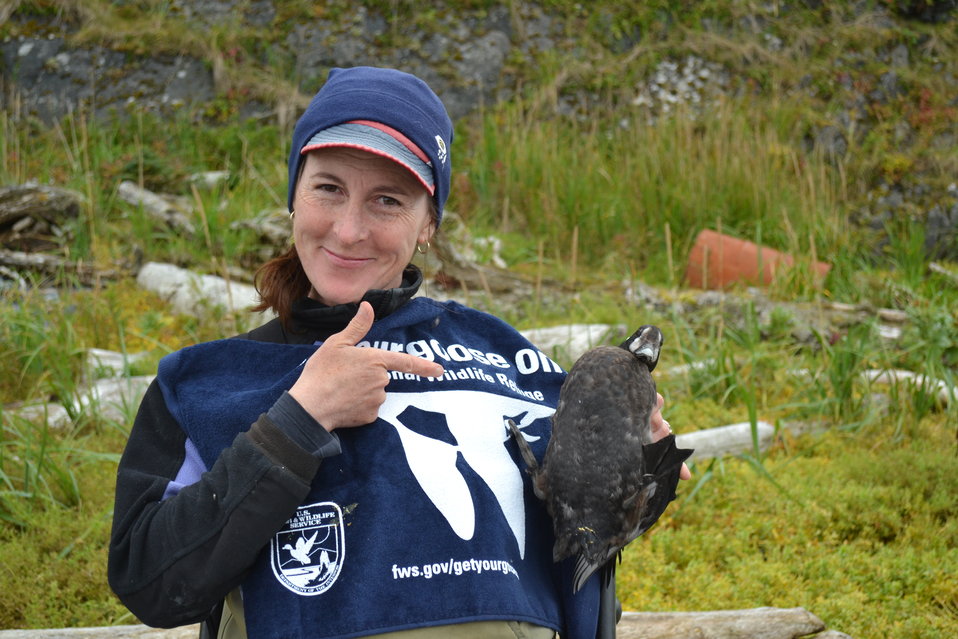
Get Your Goose On! - Alaska Style

Kodiak Refuge Bird Biologist Robin Corcoran with a Harlequin Duck

Credit: Katharine Studholme / USFWS

The Kodiak National Wildlife Refuge is a United States National Wildlife Refuge in the Kodiak Archipelago in southwestern Alaska, United States.

The Kodiak National Wildlife Refuge includes the southwestern two-thirds of Kodiak Island, Uganik Island, the Red Peaks area of Afognak Island and all of Ban Island in the archipelago. It encompasses 1,990,418 acres (8,054.94 km2).[2] The refuge is administered from offices in Kodiak.

The refuge contains seven major rivers and about 100 streams. It is a spawning ground for all six species of Pacific Ocean salmon, trout and several other fish species, as well as a nesting ground for 250 species of bird, many of which feed on salmon. The refuge has only six native species of mammals: Kodiak brown bear, red fox, river otter, ermine, little brown bat and tundra vole. The non-native mammals Sitka deer, mountain goat, Roosevelt elk, snowshoe hare and beaver were introduced to the archipelago between the 1920s and 1950s and are now hunted and trapped.

The climate of the refuge is that of southern Alaska, mild and rainy. Many areas in the refuge are densely forested with Sitka Spruce at lower elevations. There are grasslands in drier areas and at higher elevations. The refuge contains several small glaciers.